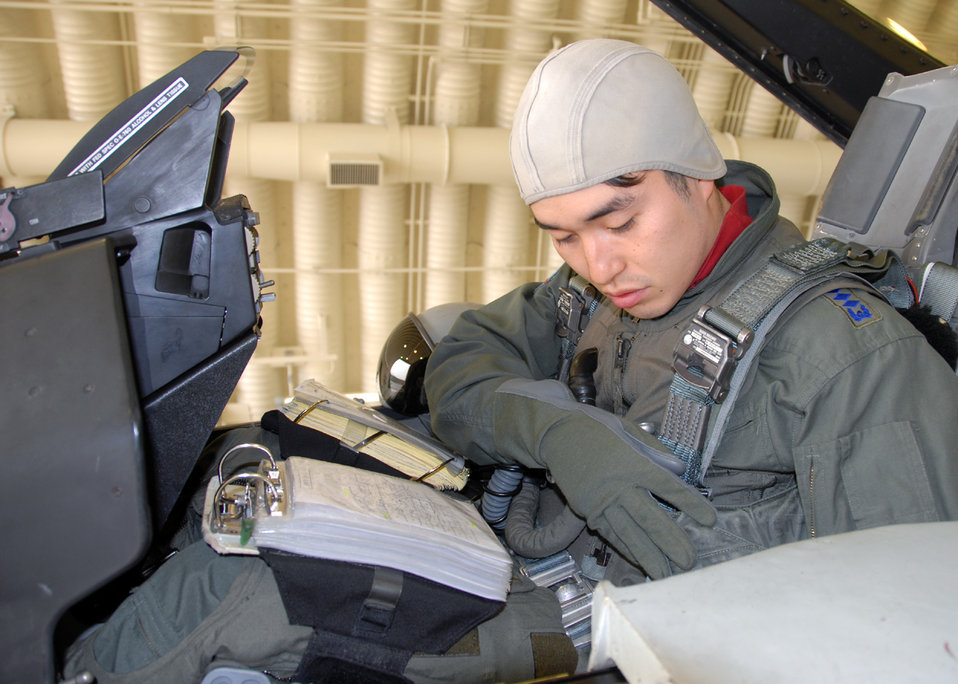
Airmen participate in buddy wing program

Capt. Jeong-Ho Cho (left), and Capt. Young-Kwon Ko (second from left) both KF-16C Fighting Falcon pilots assigned to the 157th Tactical Fighter Squadron, Seosan Air Base, Republic of Korea Air Force, conduct flight planning with Capt. William Bolton and Capt. Paul Davidson (right) both F-16C Fighting Falcon pilots assigned to the 36th Fighter Squadron, during the buddy wing program Dec. 11 to 13. The purpose of the buddy wing program is to exchange ideas, introduce tactics and improve interoperability between the U.S. and Republic of Korea air forces.